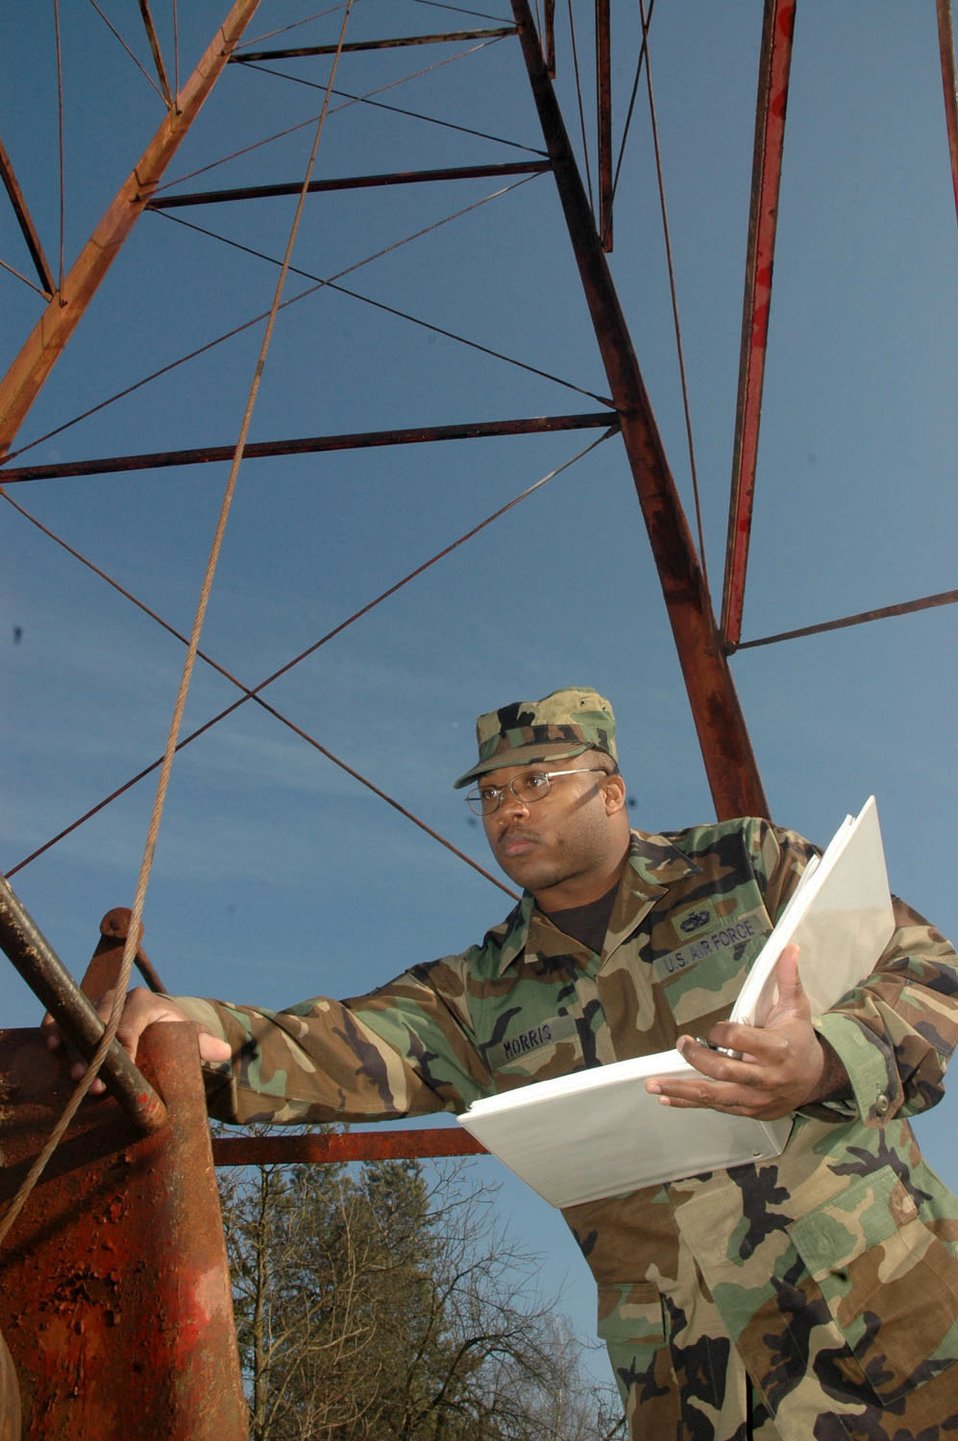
Keeping Tuzla airfield operational

TUZLA AIR BASE, Bosnia and Herzegovina (AFPN) -- Staff Sgt. Mario Morris inspects the harness of an antenna cable system for corrosion. He is assigned to the 401st Air Expeditionary Wing.